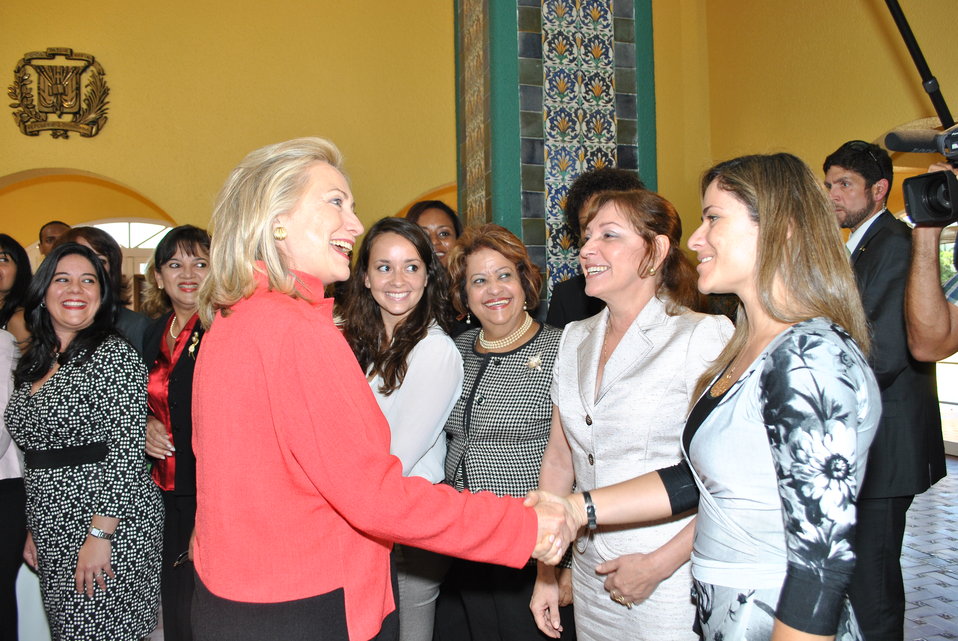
Secretary Clinton Is Greeted By Women's Entrepreneurship Network Participants

U.S. Secretary of State Hillary Rodham Clinton is greeted by participants of the Women's Entrepreneurship Network during the Pathways to Prosperity Conference in Santo Domingo, Dominican Republic, on October 5, 2011.